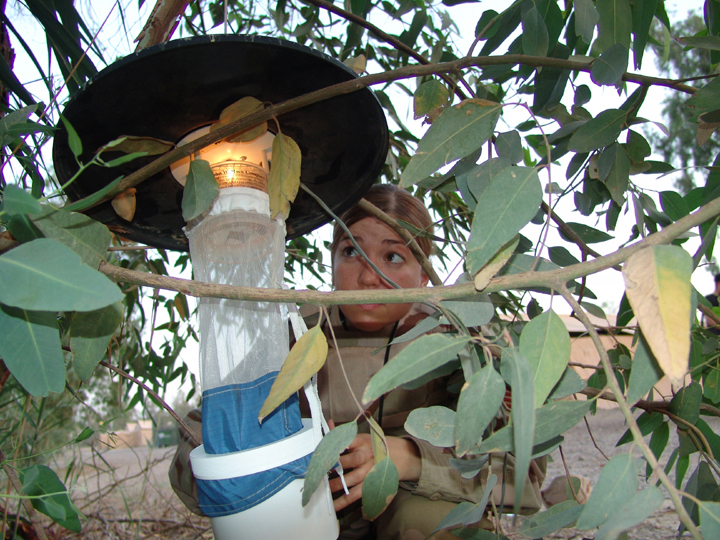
Deployed Airmen use 'germ warfare' to ensure force readiness

BAGHDAD, Iraq -- Staff Sgt. Becky Patterson sets a trap to catch sand flies and mosquitoes that will be tested for insect-borne diseases that threaten U.S. forces deployed to Iraq. She is assigned to the 447th Expeditionary Medical Squadron's public health flight and is deployed from Maxwell Air Force Base, Ala.